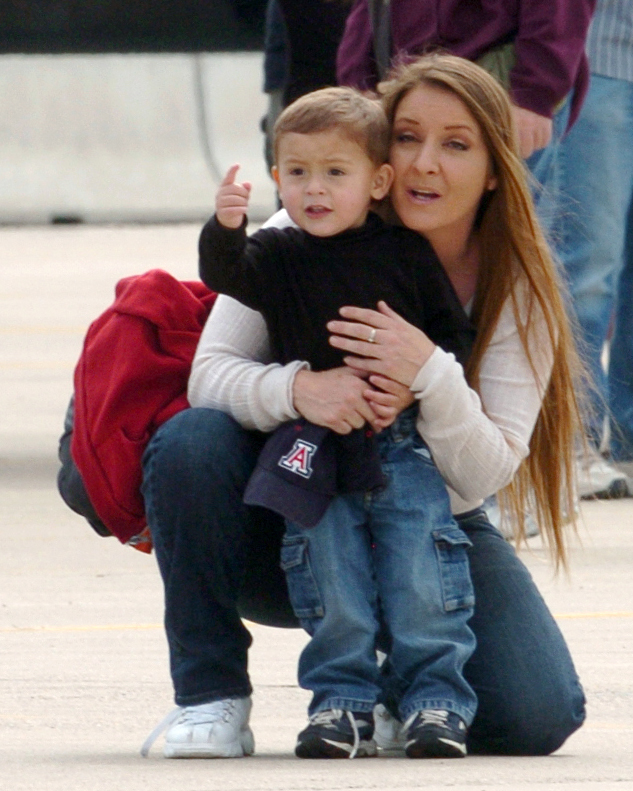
Air Force Week

Julie and Elijah Zamora look watch an arial demonstration at